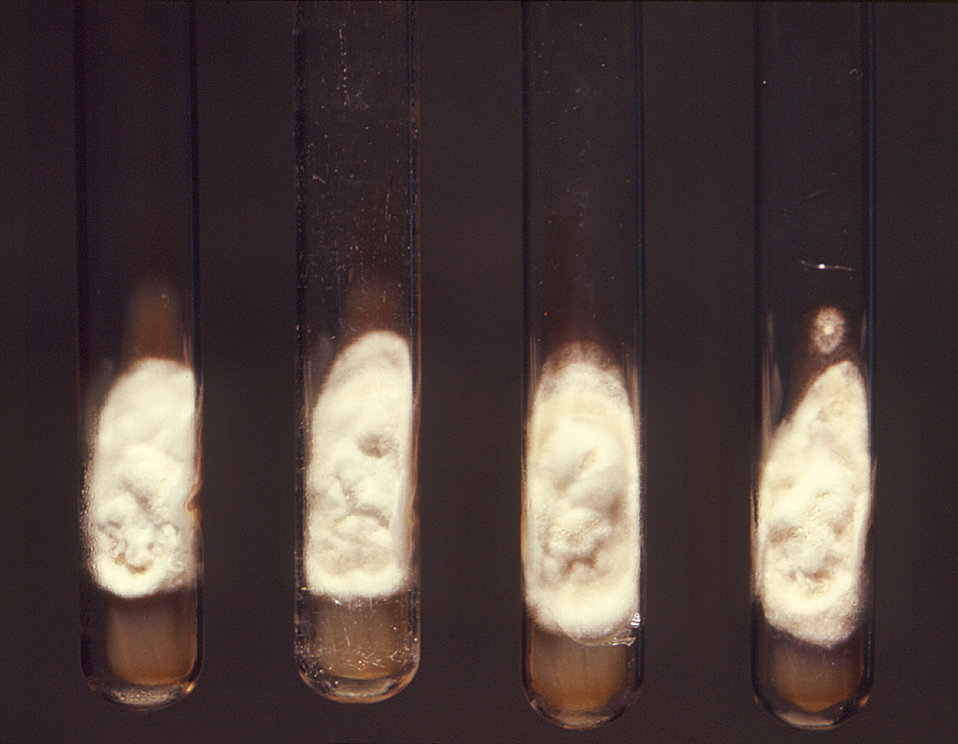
This photograph revealed slant-culture test tubes, each containing a colony of Histoplasma capsulatum fungal organisms, which had been isolated from Israeli soil samples. H. capsulatum is the etiologic agent responsible for causing the disease known as histoplasmosis.What is histoplasmosis?